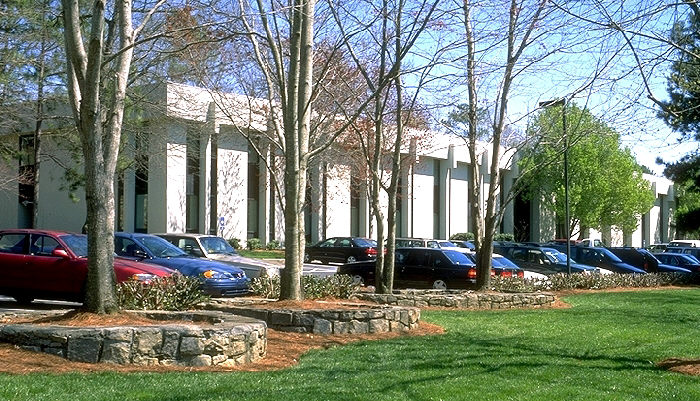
Stanford Building, Koger Center.